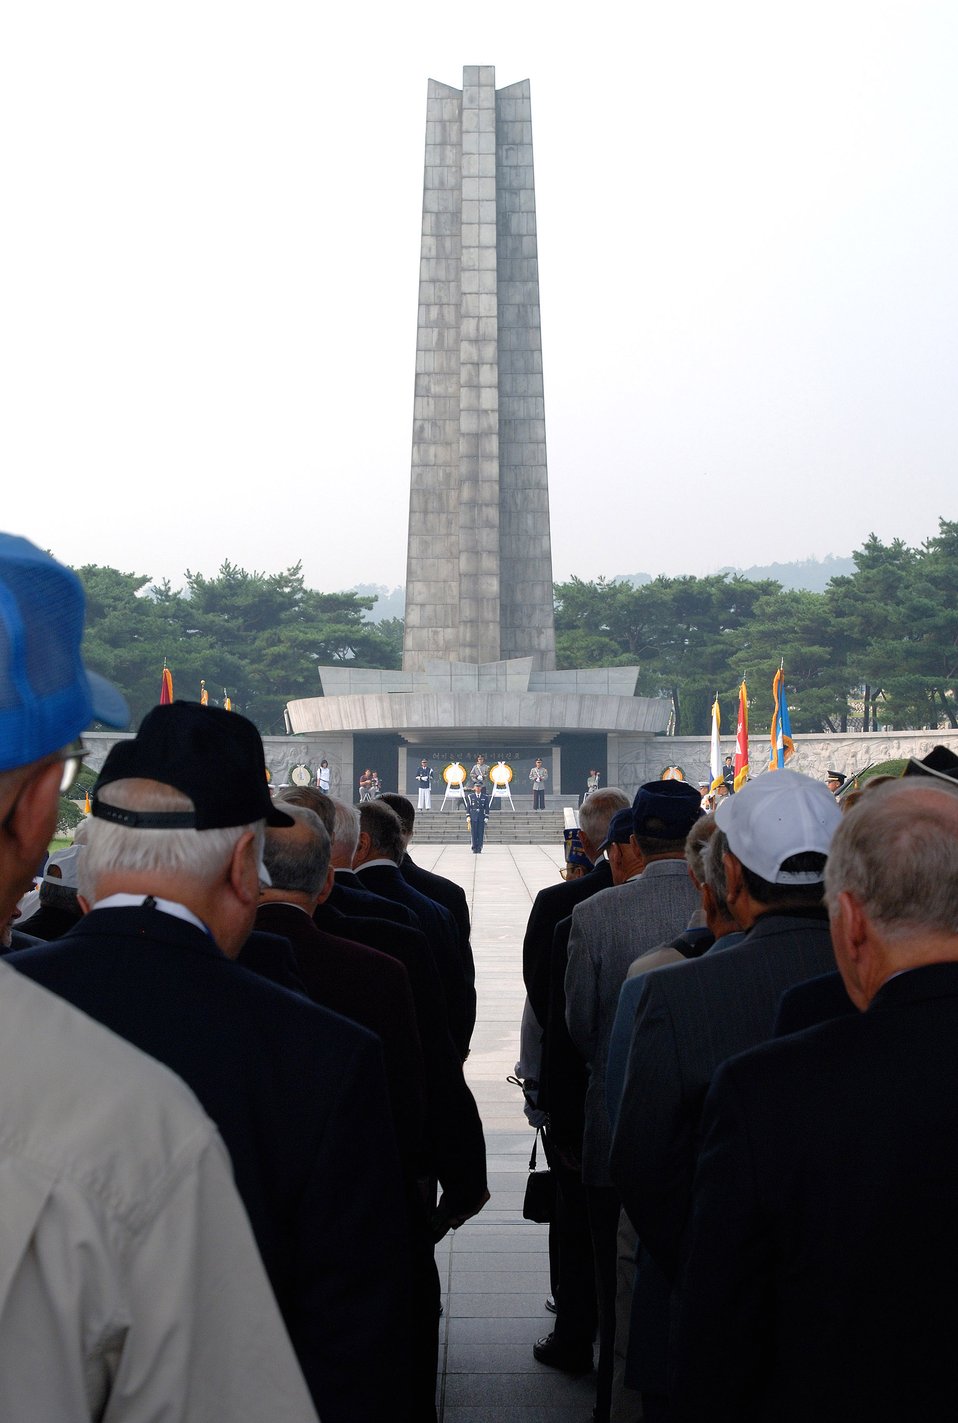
Korean War veterans give sage advice to Airmen

Korean War veterans prepare for a wreath-laying ceremony at the South Korean National Cemetery Sept. 12. The South Korean government's Revisit Korea program invites war veterans each year to come to South Korea to honor the men and woman from 21 different countries who served during the Korean War. Nearly 25,000 veterans have participated in this program since 1975.